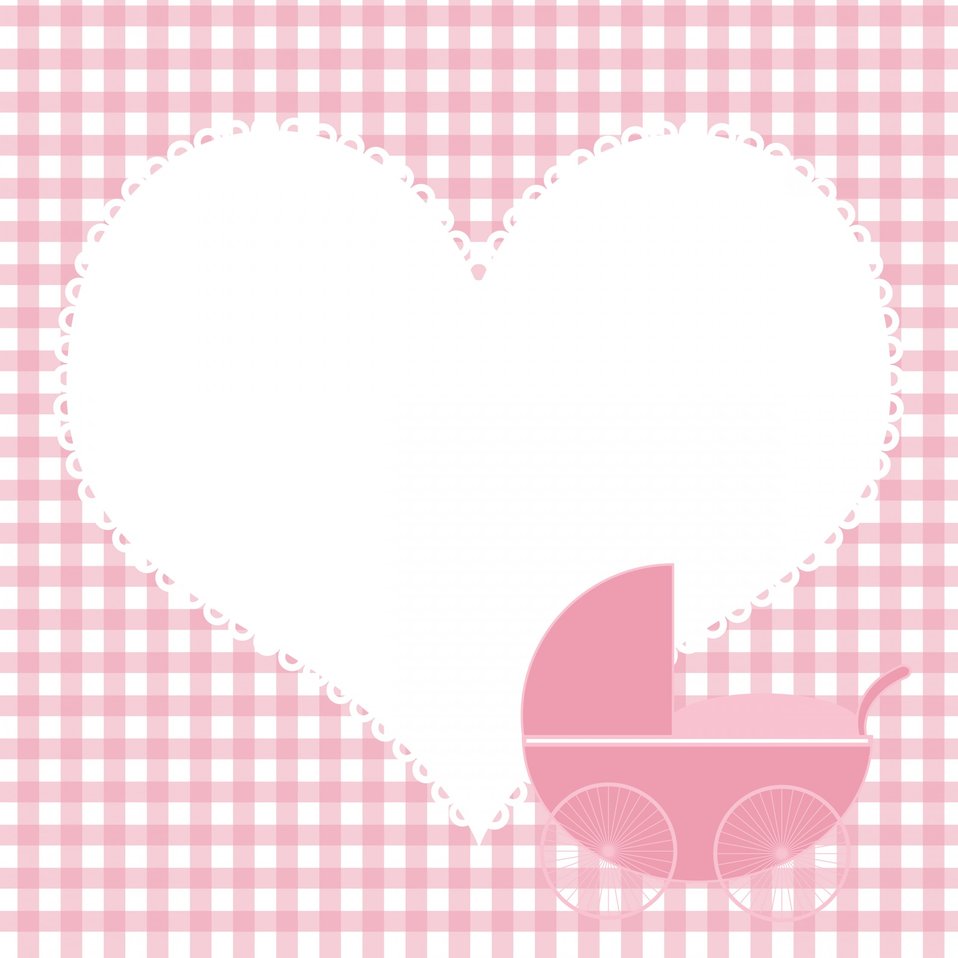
Baby girl heart background

Cute baby girl background for baby arrival card or baby shower.